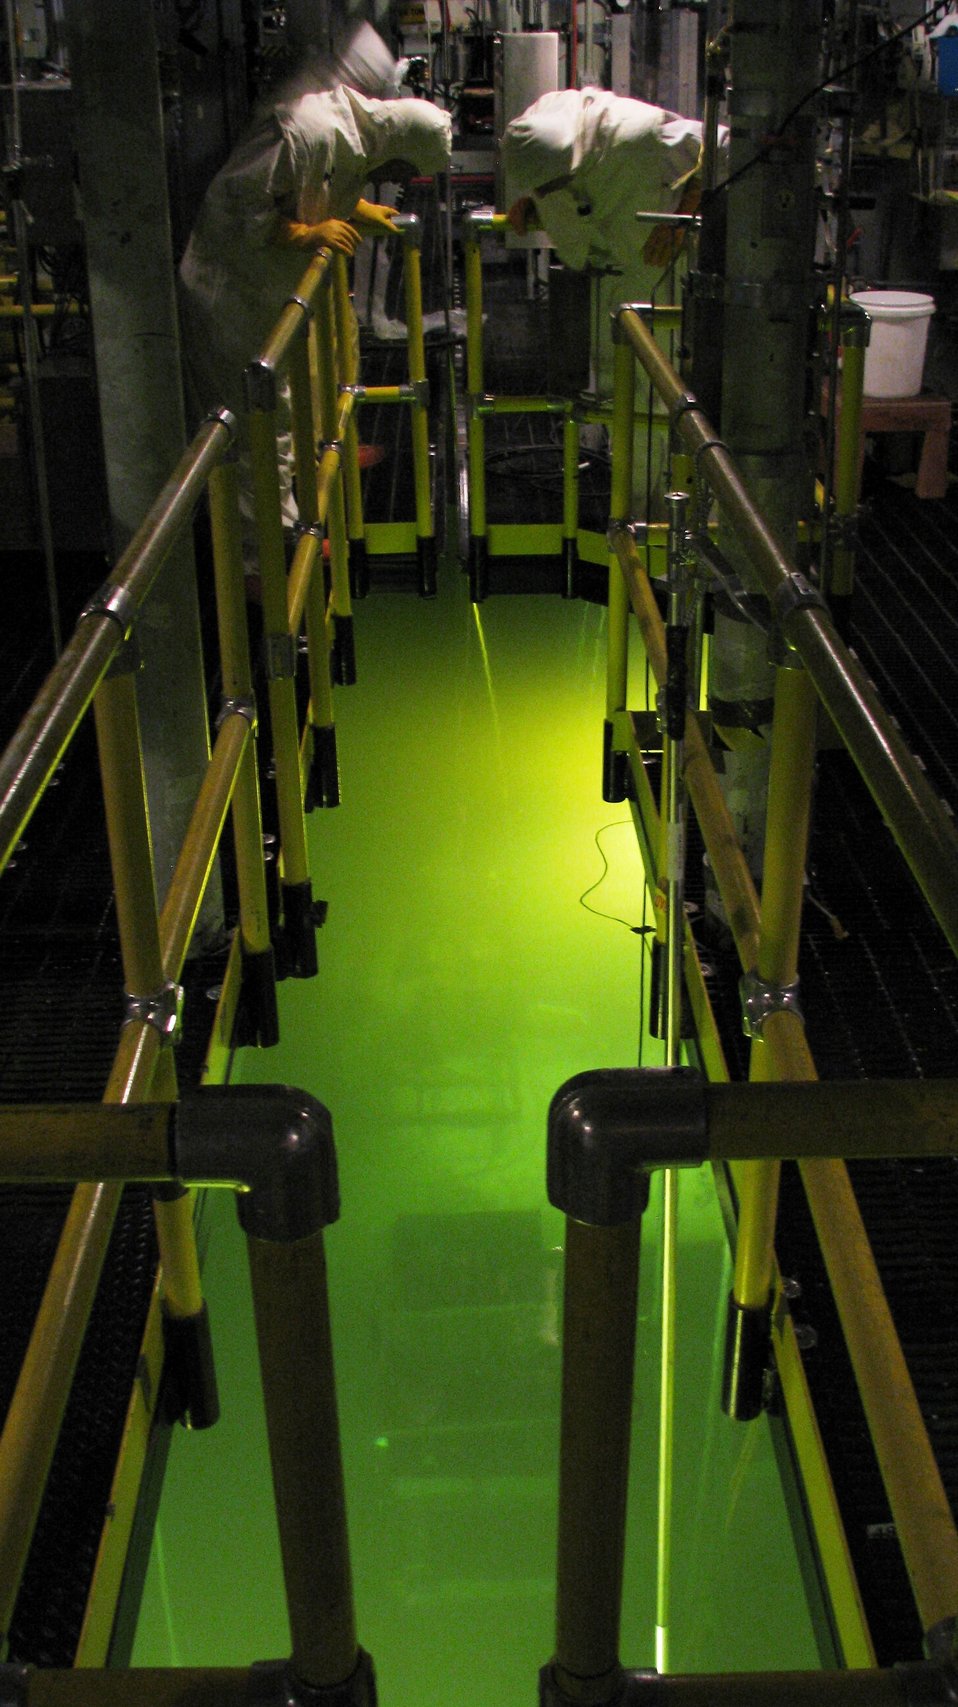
Hanford - K West Basin

This photo shows the inside the K West Basin facility, where workers are retrieving highly radioactive sludge material under 17 feet of water.